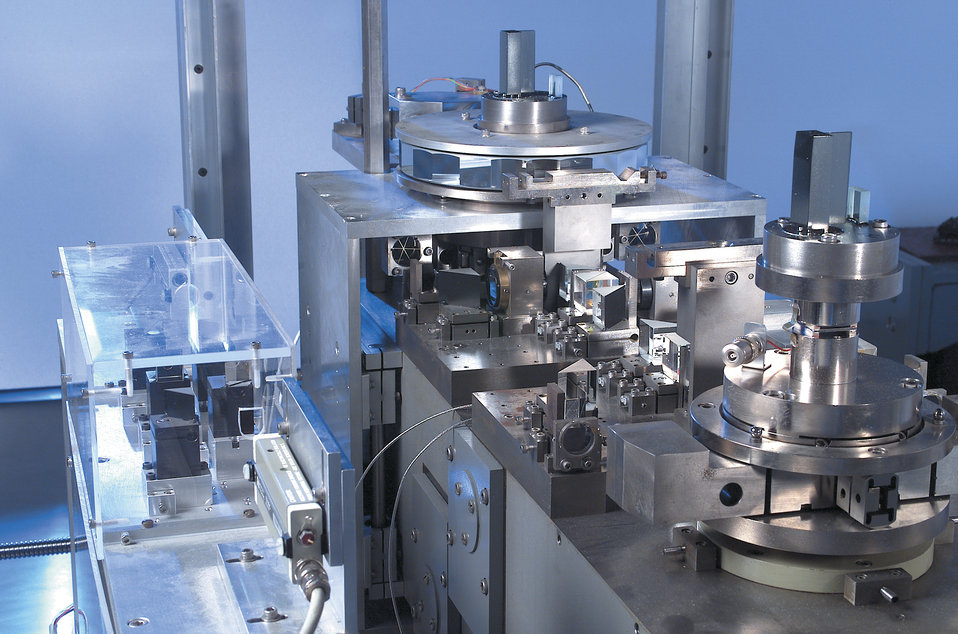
GAMS4

An instrument called GAMS4, originally designed and built at NIST and now located at Institut Laue Langevin in France, was used in experiments that helped to confirm Einstein's famous equation E=mc². GAMS4 measured the angle at which gamma rays are diffracted by two identical crystals made of atoms separated by a known distance. The two crystals are the dark gray rectangles on circular platforms in the foreground and background of the photo.